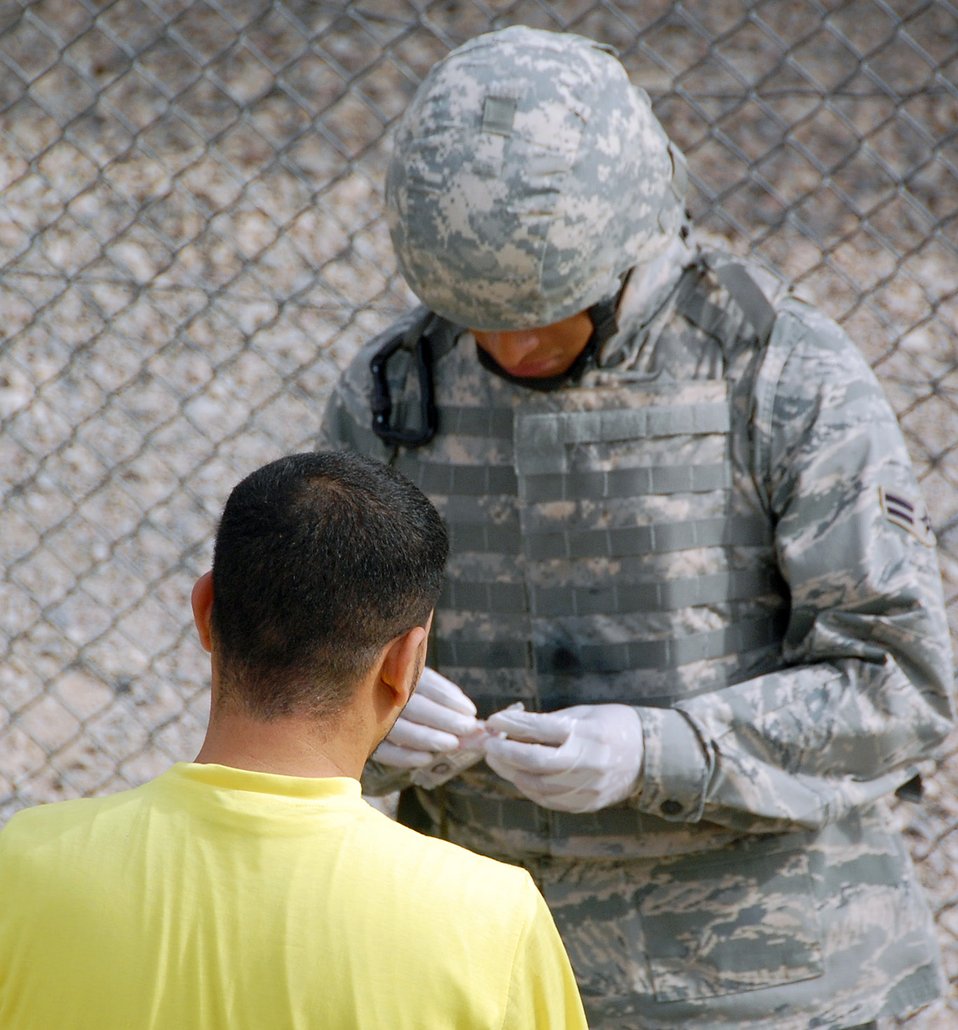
Visitation searchers balance efficiency, safety, humane treatment in Iraq

A searcher with the 887th Expeditionary Security Forces Squadron conducts a search of a detainee before a visit with his family May 12 at the Theater Internment Facility's visitation center at Camp Bucca, Iraq. Security Forces Airmen working at the visitation center are responsible for making sure no contraband makes it into the visitation area while at the same time treating the detainees and their families with the highest degree of dignity and respect.